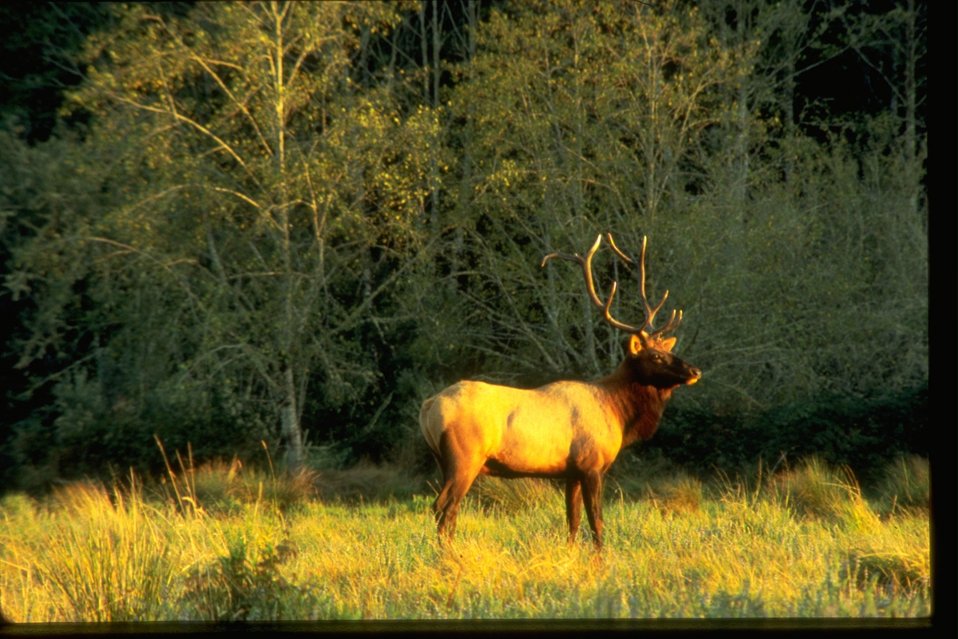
A lone elk standing in a field with the glow of the sun.